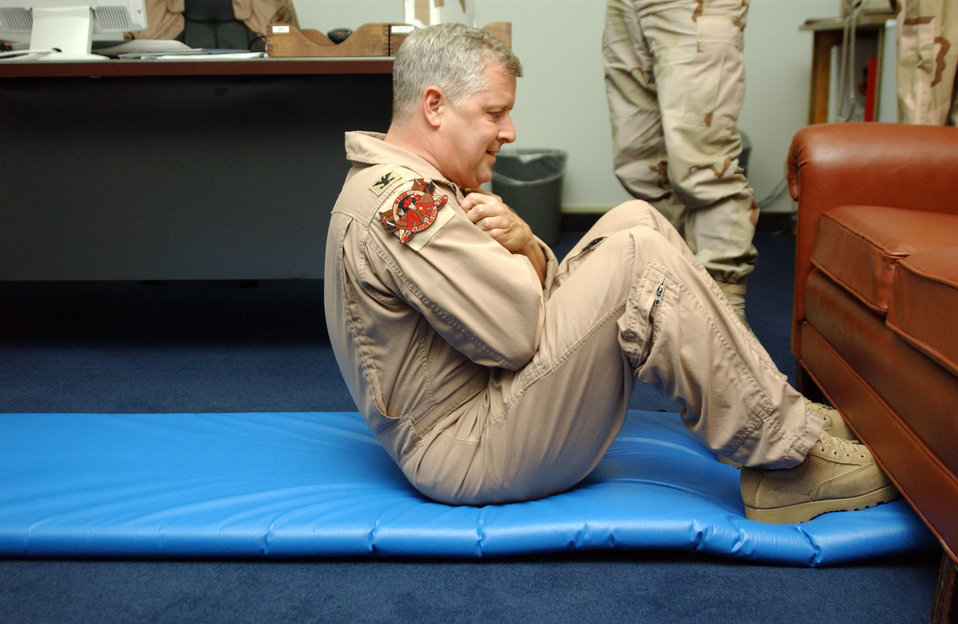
SOUTHWEST ASIA - Col. Rod Gillis does crunches on his office floor at a forward-deployed location Oct. 3. Airmen of the commander's staff recently started playing